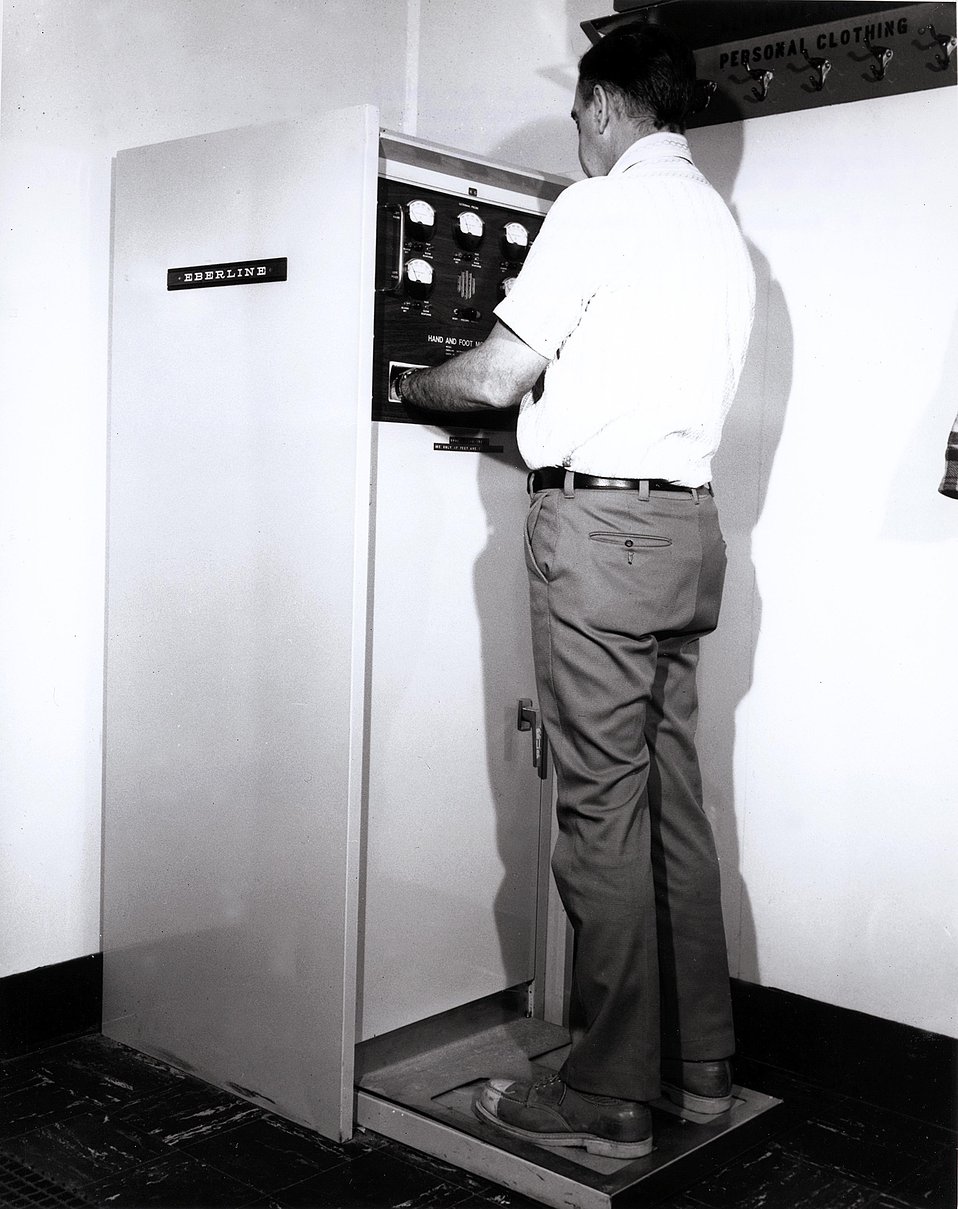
Employee checking hands and feet for radiation contamination at the Eberline hand and foot counter.